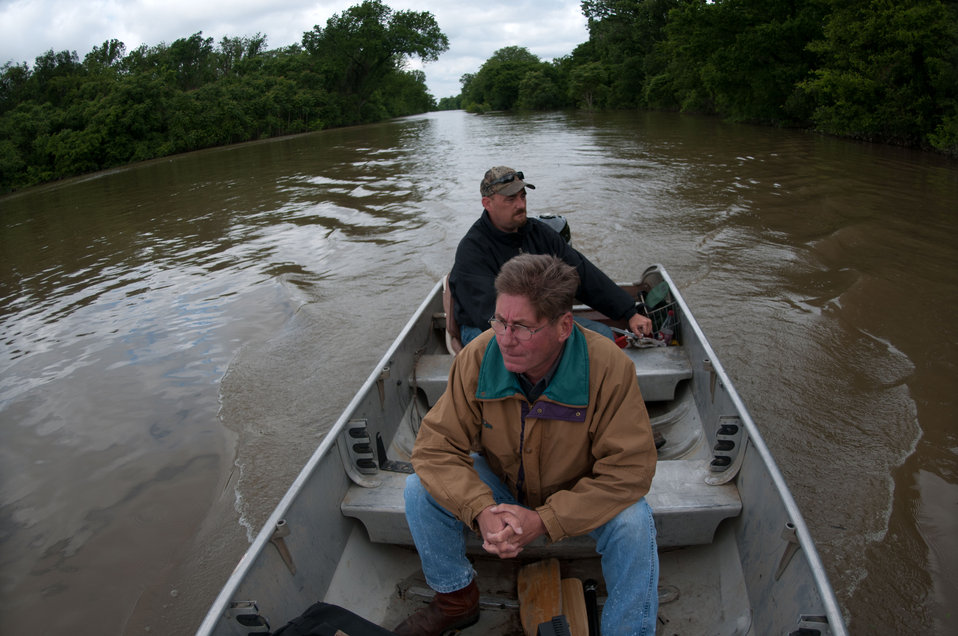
Joe Higdon (right) and Lee Tacito travel by boat to Mr. Higdon's ranch on President's Island is still submerged under 6-12 feet of Mississippi River waters near Memphis, TN, on Sunday, May 15. 2011.